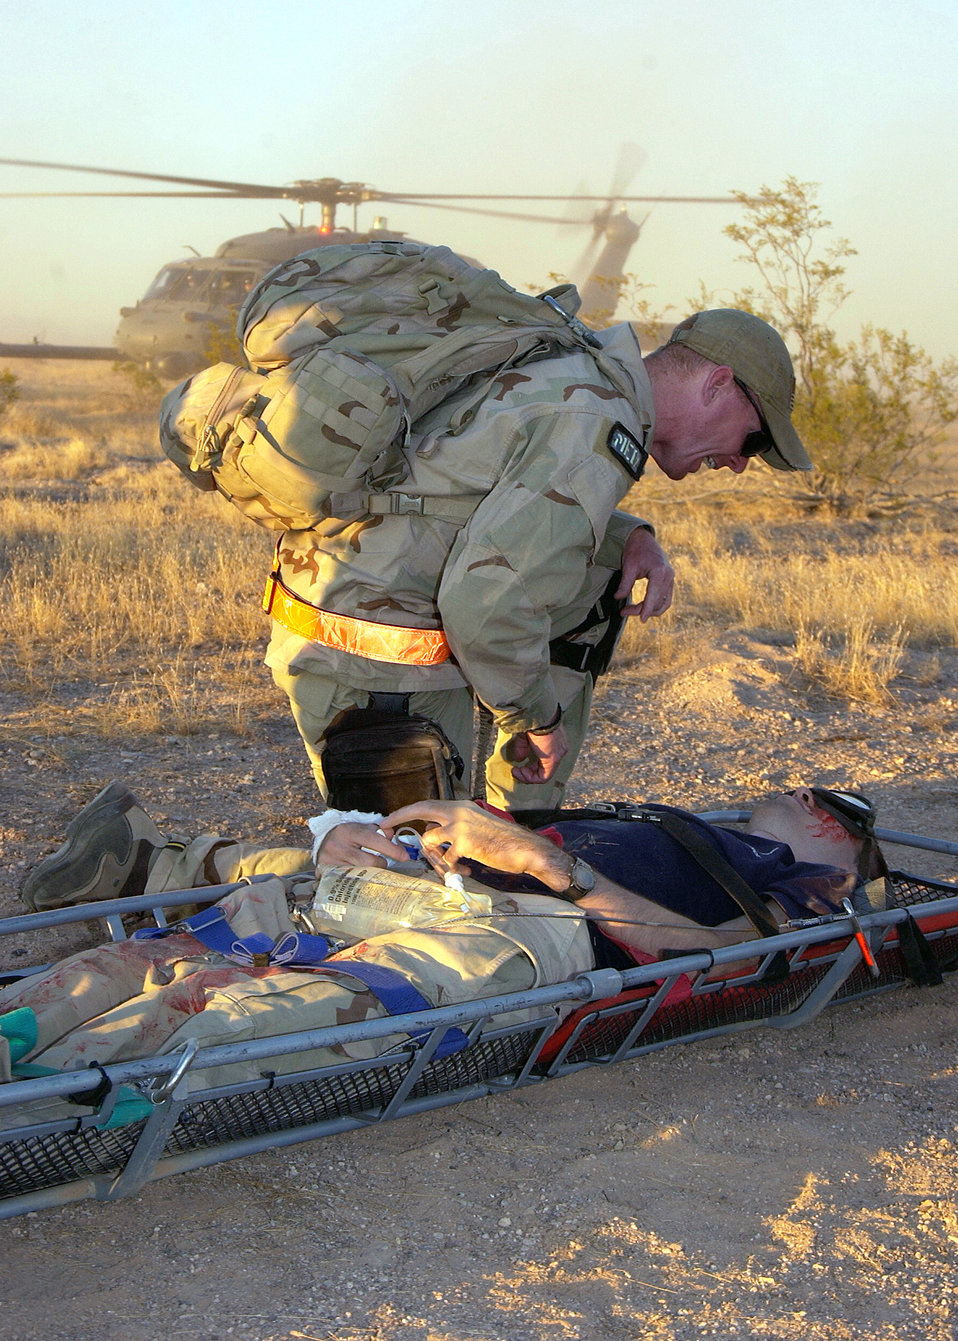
Timely response

Capt. (Dr.) John Dorch checks the vital signs of a simulated patient before he is transferred to an HH-60 Pave Hawk at Gila Bend Auxiliary Air Field, Ariz., on Tuesday, May 30, 2006. The scenario involved a simulated plane crash with 20 survivors and was part of a major accident response exercise. Pararescuemen were evaluated on their initial on-scene assessment, treatment and response time. Captain Dorch is a flight surgeon with the 48th Rescue Squadron at Davis-Monthan Air Force Base, Ariz.